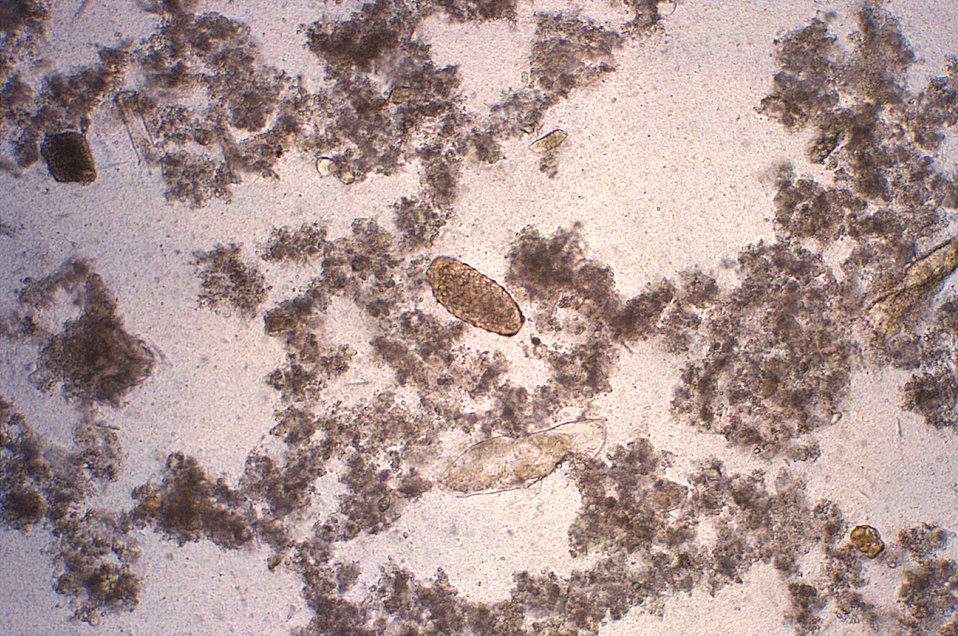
Magnified 128X, this photomicrograph revealed some of the ultrastructural features displayed by an infertile, Ascaris lumbricoides egg.